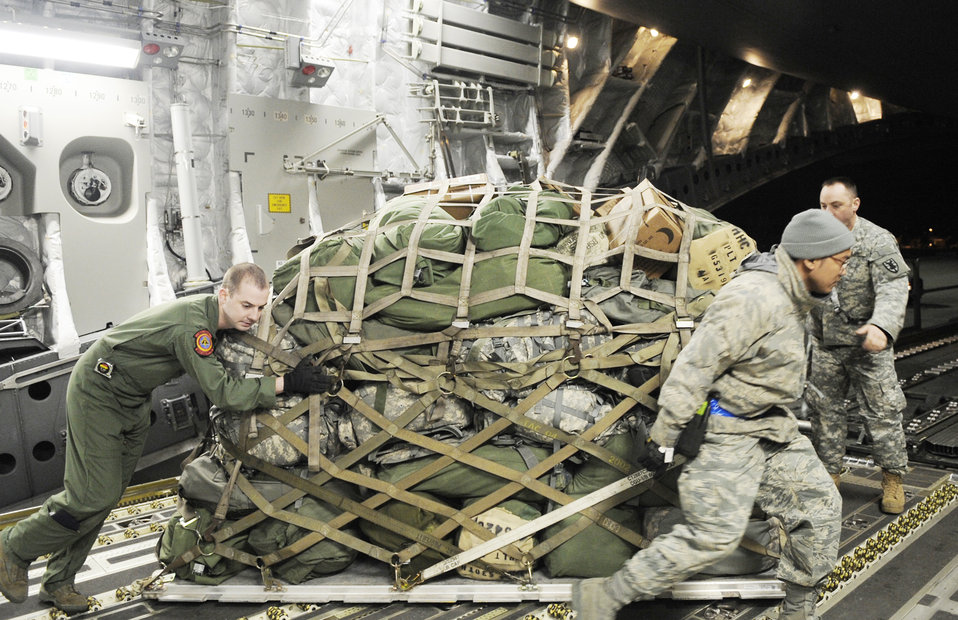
Airmen, Soldiers continue delivering troops, aid to Haiti

Airmen and Soldiers load cargo onto a C-17 Globemaster III Feb. 8, 2010, at Langley Air Force Base, Va. Through a joint effort by Soldiers and Airman from Joint Base Langley-Eustis, servicemembers and cargo are transported to Haiti as part of Operation Unified Response.